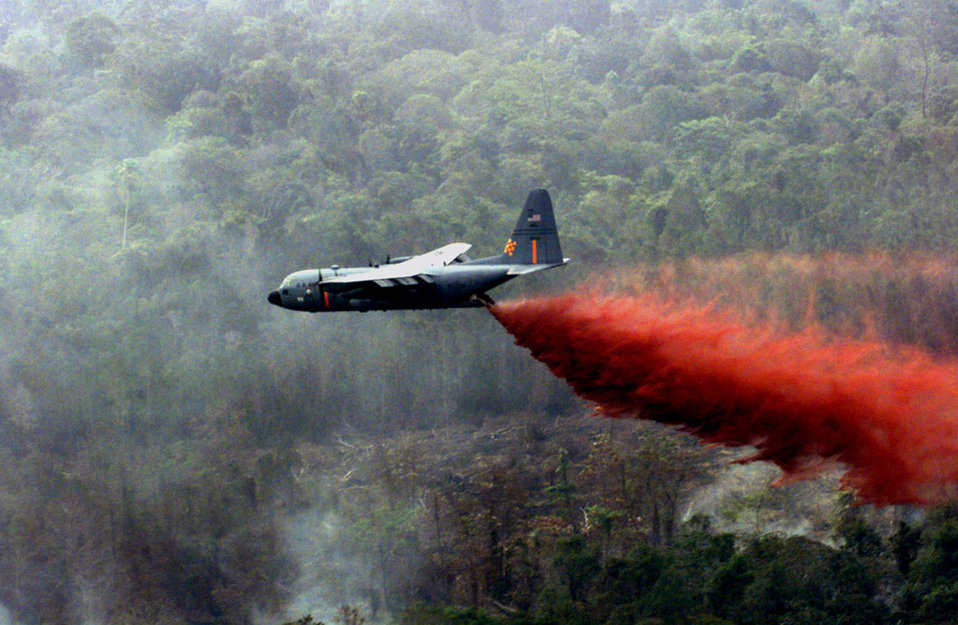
302nd AEG continues to fight Texas wildfires

C-130 Hercules aircraft, operated by the 302nd Air Expeditionary Group and equipped with modular airborne fire fighting systems, similar to the one pictured here, have dropped 90,000 gallons of retardant over Texas as of April 25, 2011, to help control the 993,000 acres of burning wildfires.